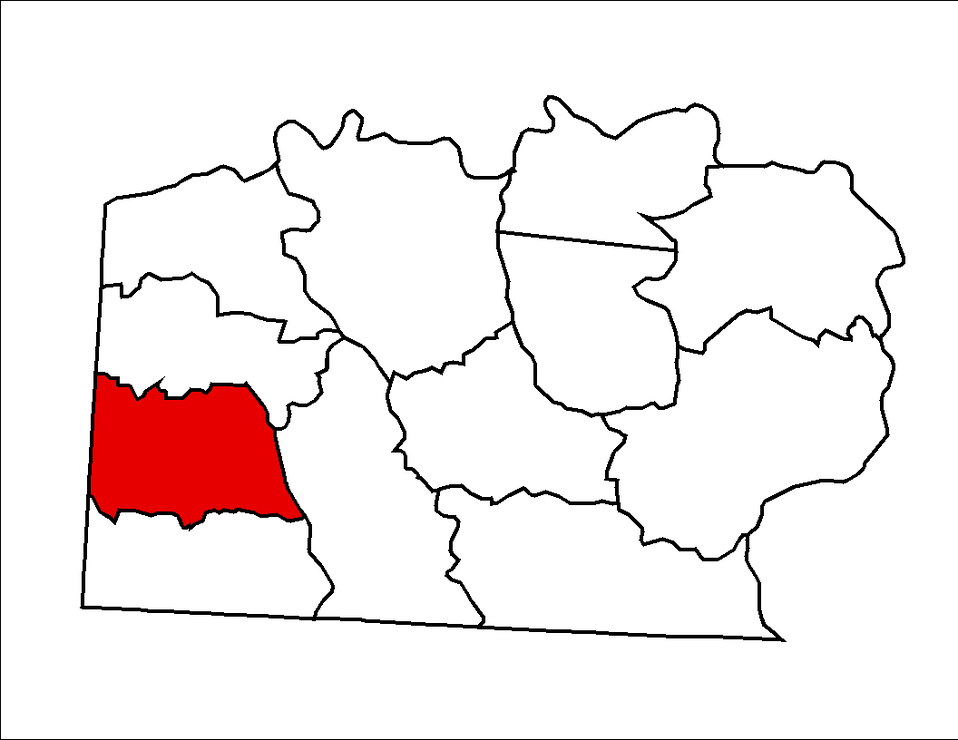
Map of North Buck Shoals Township in Yadkin County, N.C.